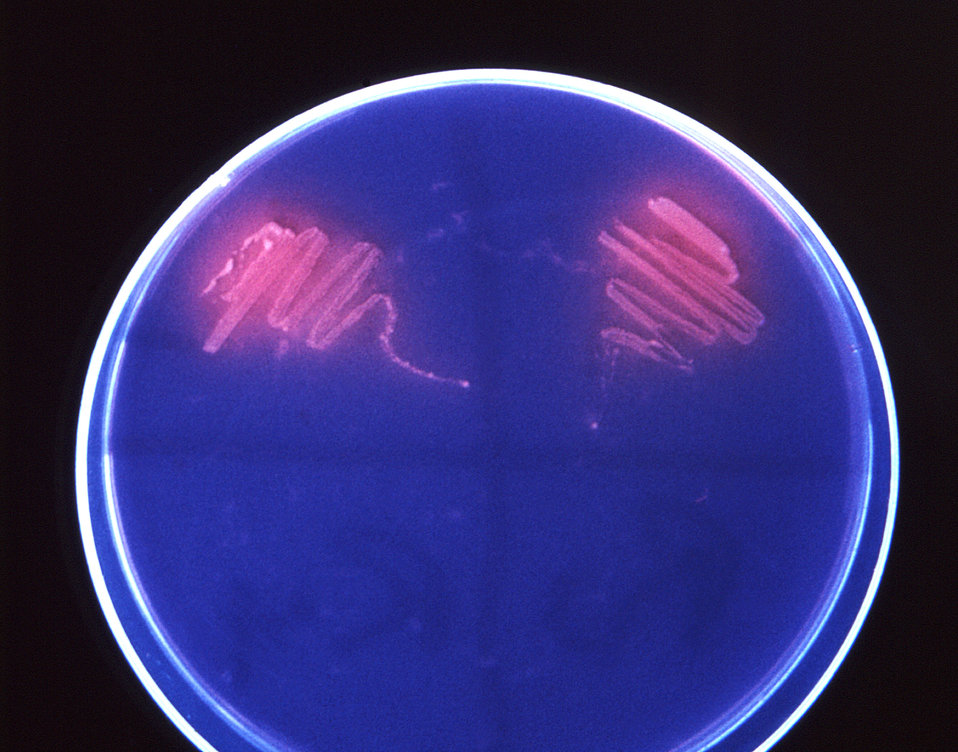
Depicted in this image was a Petri dish culture containing tissue culture medium 199, upon which was grown colonies of Corynebacterium minutissimum bacteria. The culture plate was viewed under the illumination of a Wood's lamp, after 24 hours of incubation.